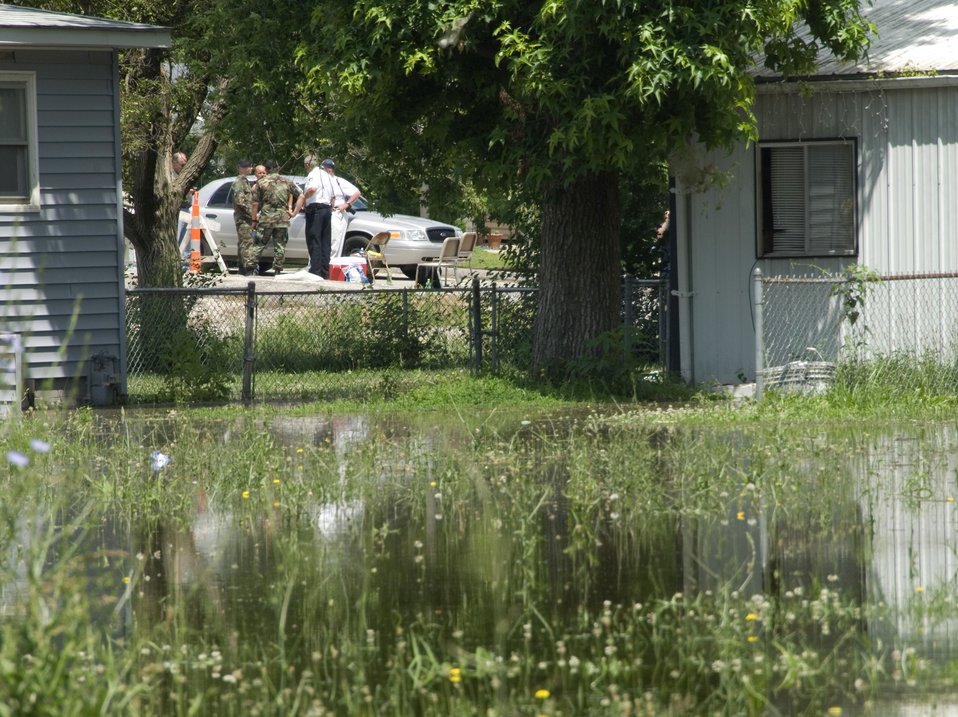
National Guards protect checkpoints

Checkpoints manned by members of the Missouri Air National Guard June 20, are set up along a 30-mile stretch of the Mississippi River near Winfield, Mo. Air National guardsmen control access to flooded areas provide a deterrent to would-be looters.